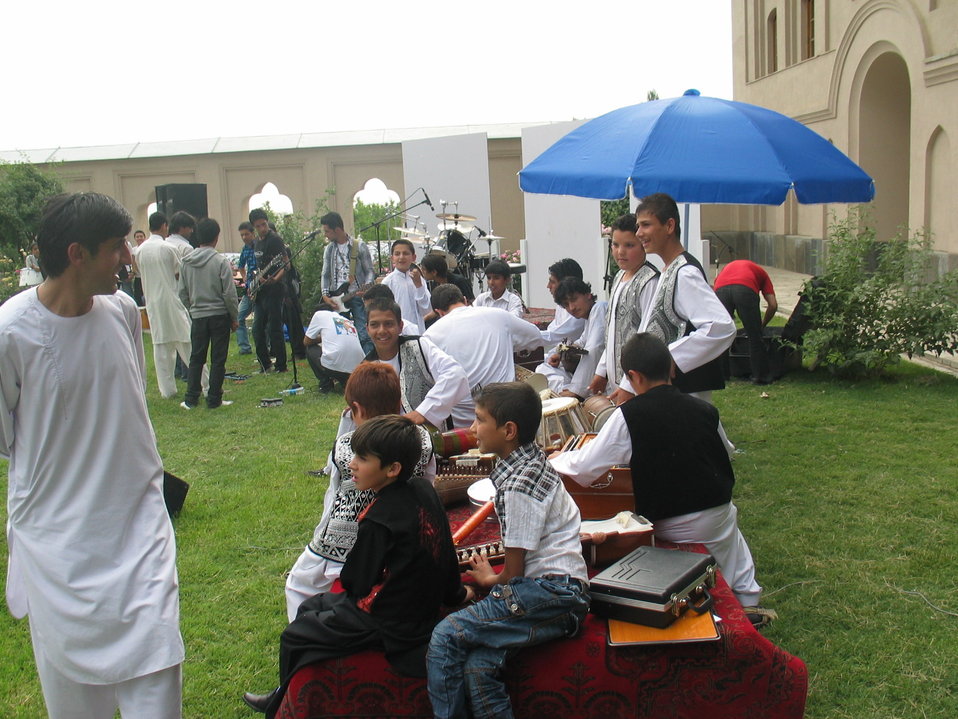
Afghan Youth Voices 006